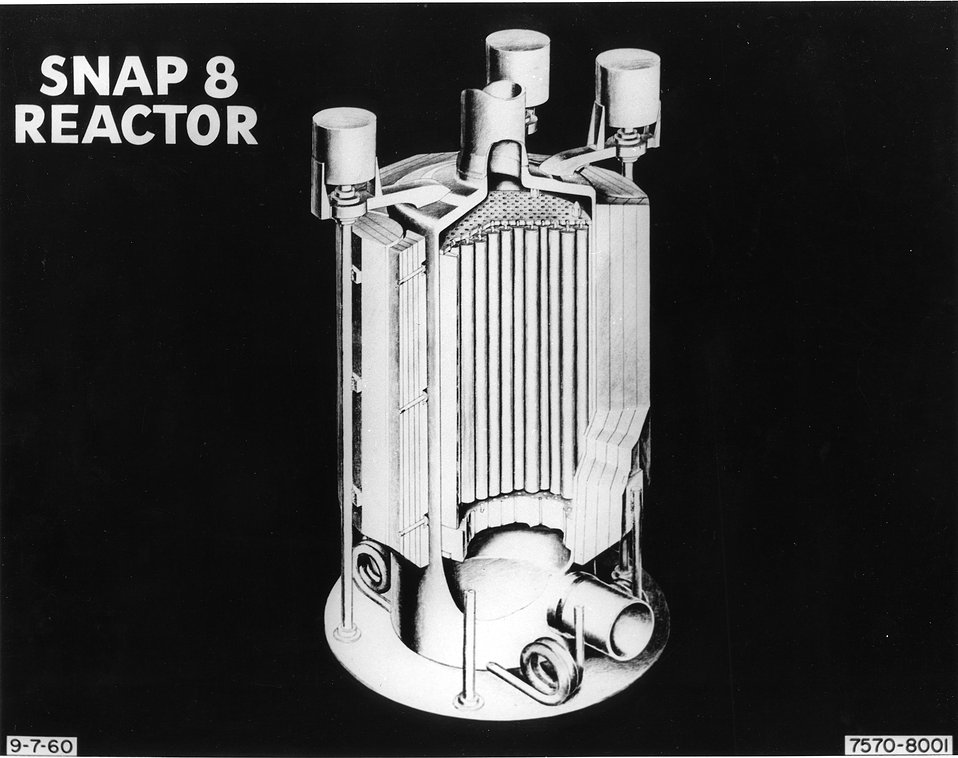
A reactor turbo-electric conversion system producing 30 to 60 electrical kilowatts-is being developed by the Atomic Energy Commission with Atomic International.